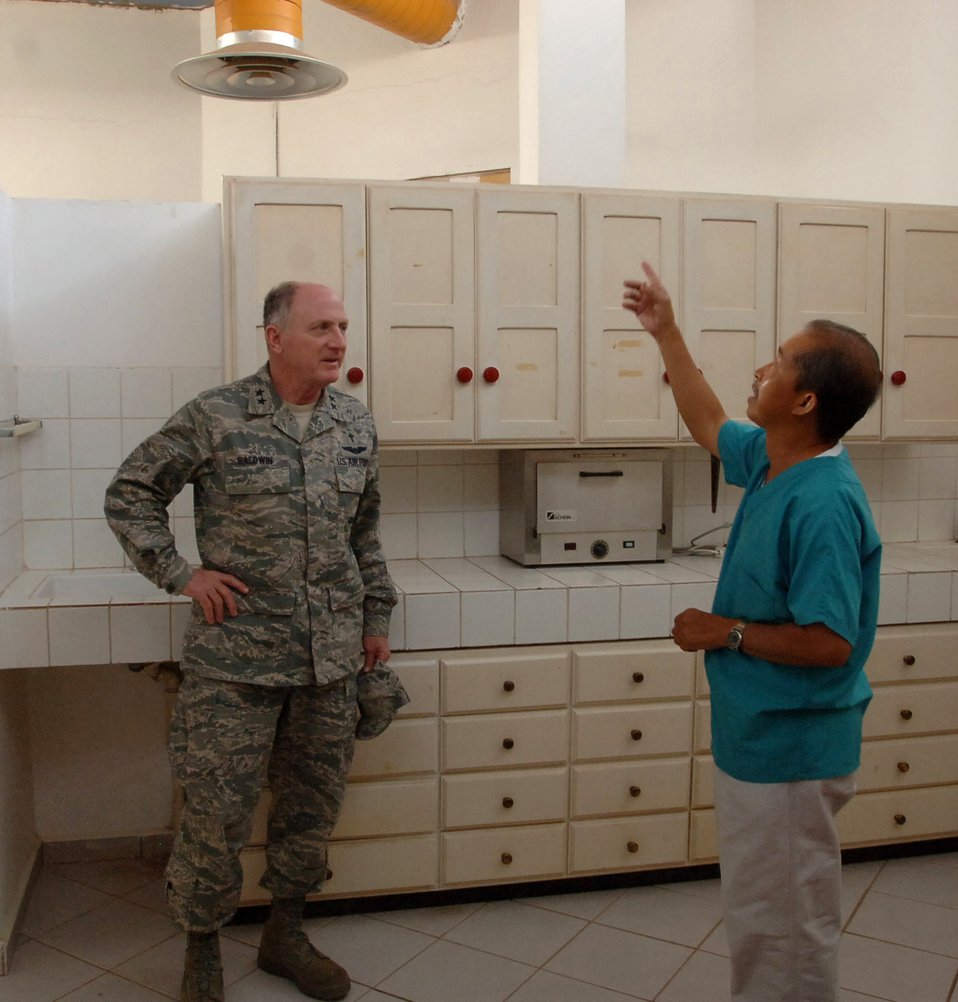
Air Force chief of chaplains visits troops in Horn of Africa

Chaplain (Maj. Gen.) Charles C. Baldwin listens to Cornelio Aba, Djibouti Adventist Health Center dentist, as he talks about some of the upgrades that have been made to the facility Dec. 4 in Djibouti City, Djibouti. Chaplain Baldwin, Air Force chief of chaplains, delivered medical supplies that will help Mr. Aba as he provides dental care for the people of Djibouti.